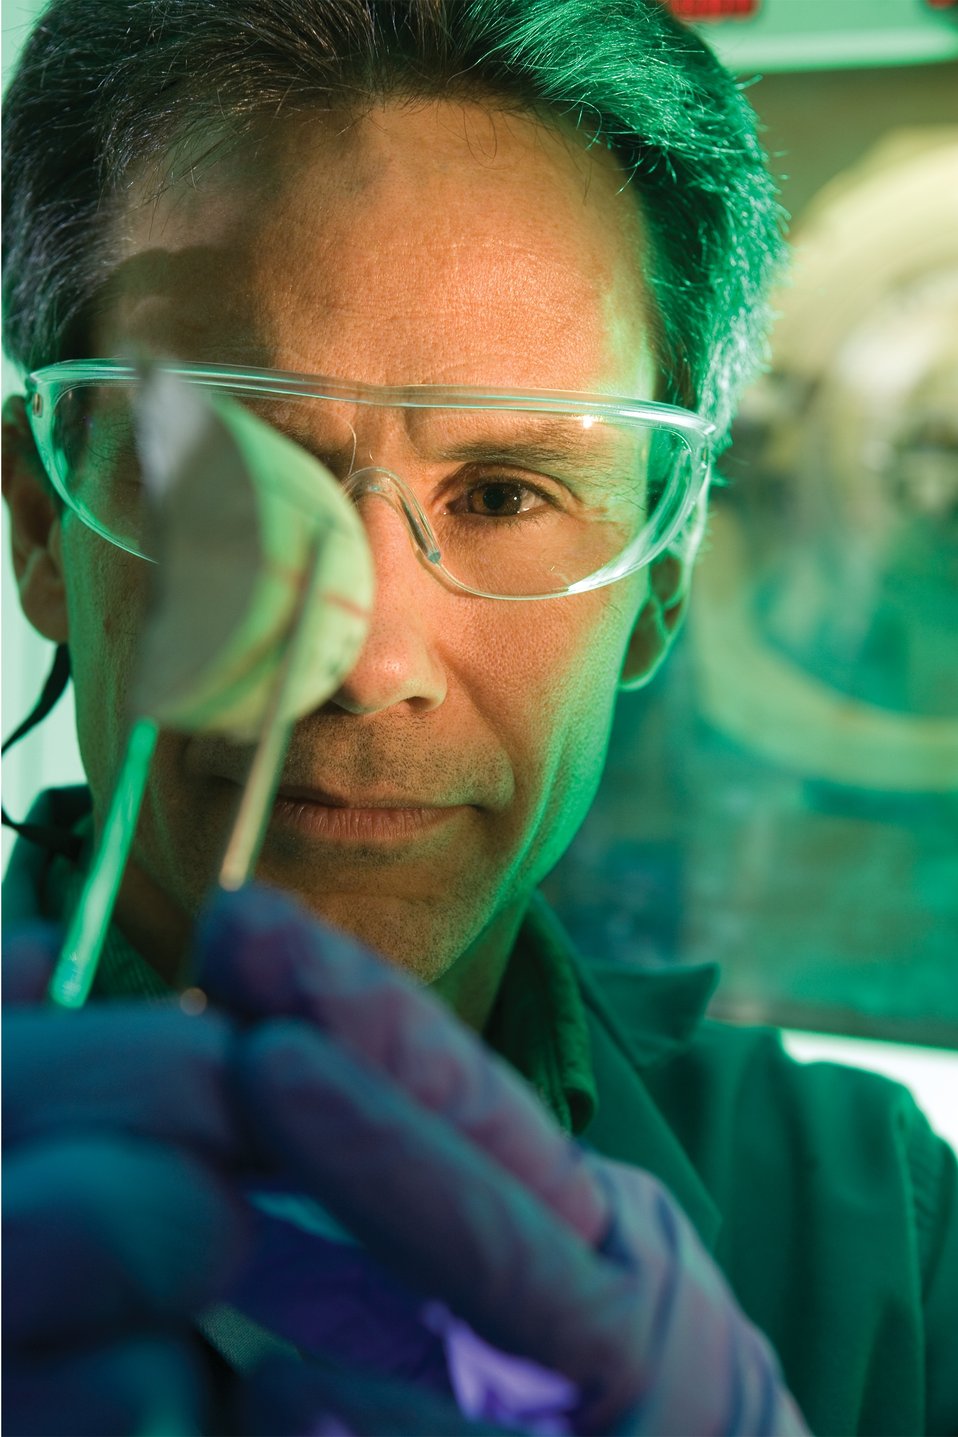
LOS ALAMOS NATIONAL LABORATORY GEOCHEMIST ANALYZES A CEMENT SAMPLE FROM A CO2-ENHANCED OIL RECOVERY OPERATION.